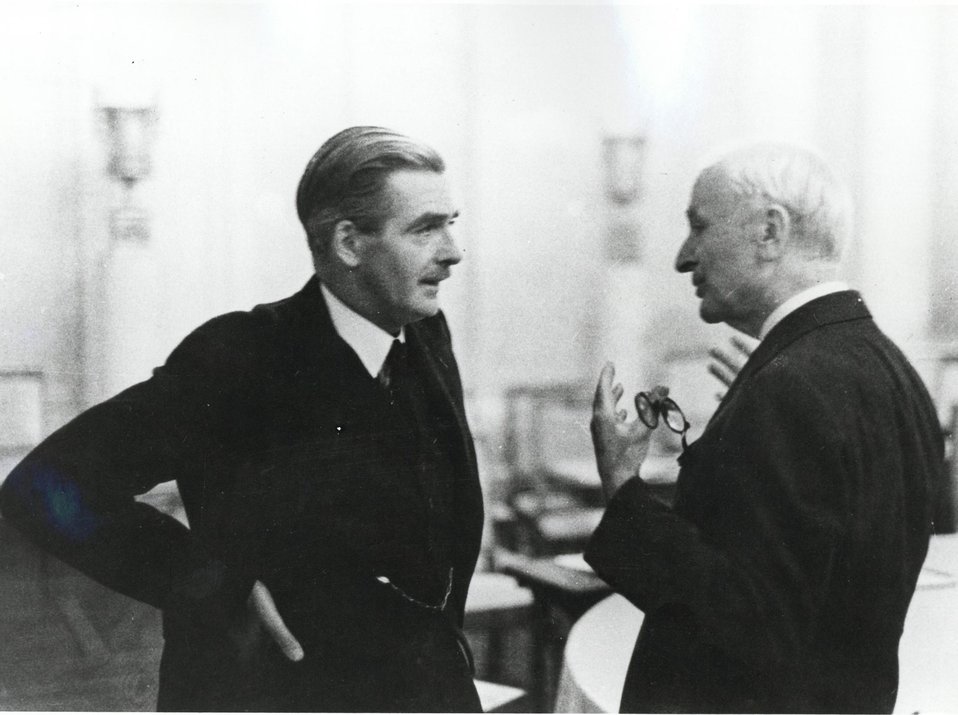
U.S. Secretary of State Cordell Hull conversing with British Foreign Minister Anthony Eden. During WWII, the United States cooperated closely with its British ally.